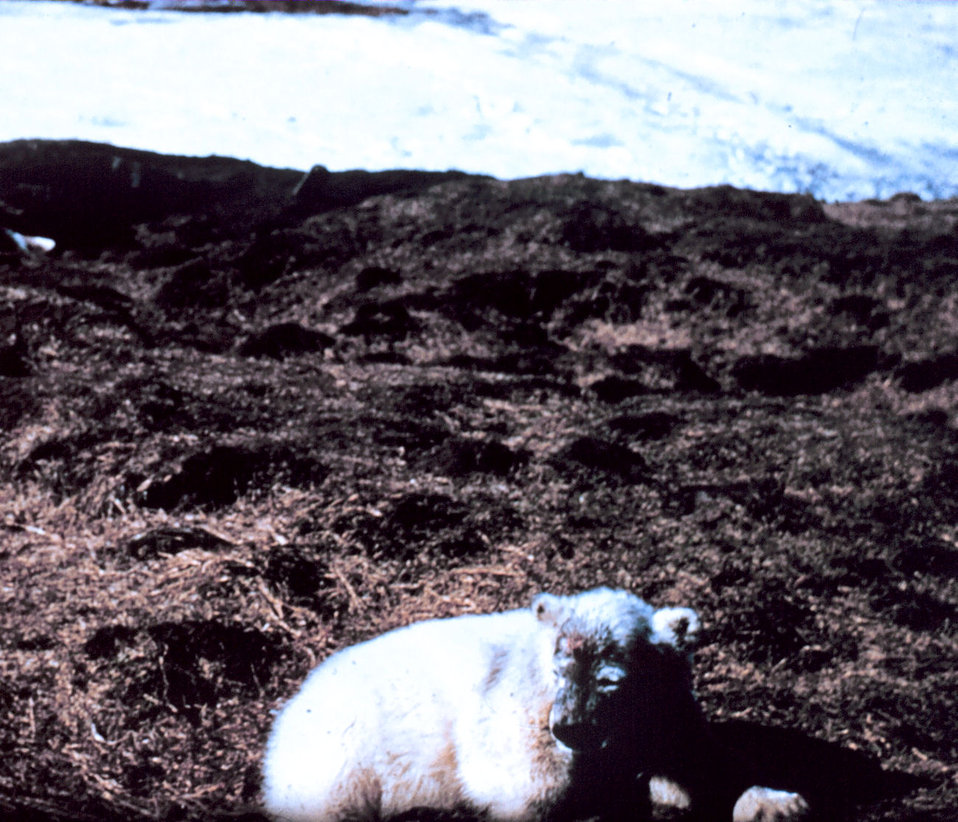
Polar bear - Ursus maritimus - on tundra.